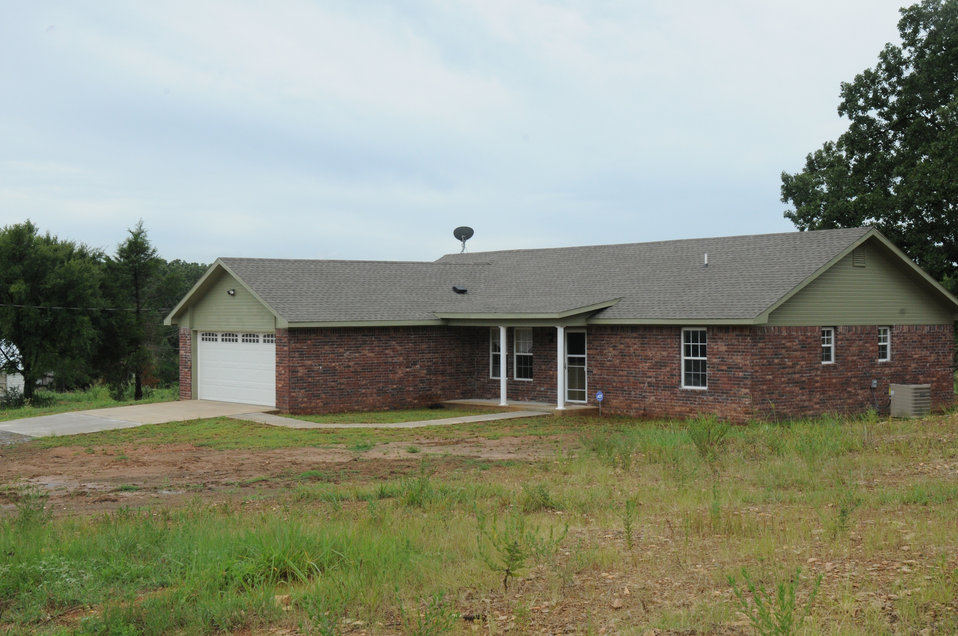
This is Bertha Anne Davis's new home in Fort Coffee, Oklahoma. Mrs. Davis is a single mother raising her son and her 2 nephews and a niece. She received a home loan from the U.S. Department of Agriculture Rural Development (RD) agency using funding from the American Recovery and Reinvestment Act (ARRA) for a home loan of $98 thousand. She was living in a 2-bedroom ranch and now has a new 4-bedroom home in Fort Coffee, Oklahoma. She works for the Fort Coffee, OK school system and is attending night school to get her teaching degree.